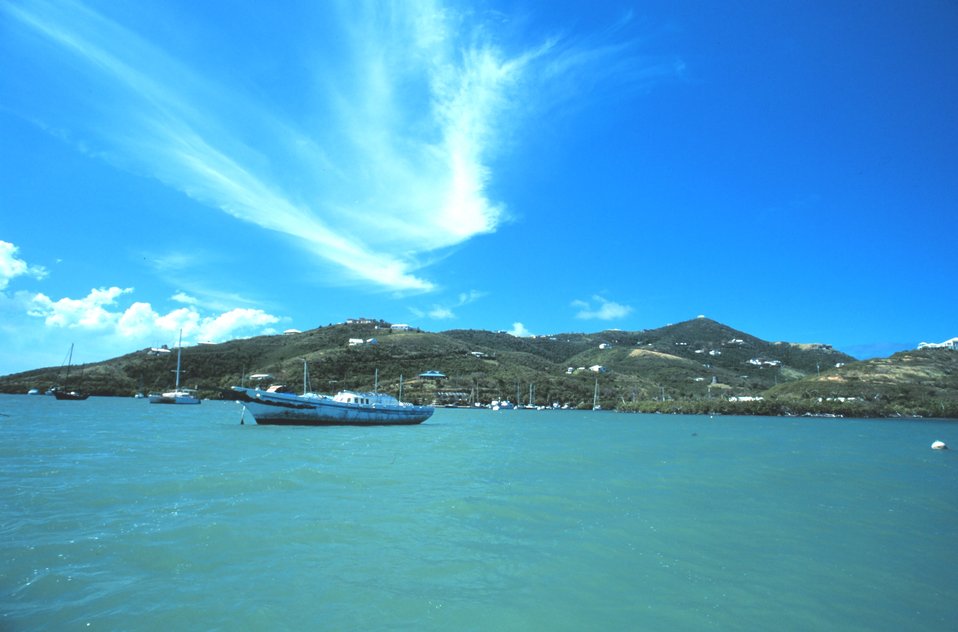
A view of Salt River Bay, where Columbus landed and was attacked by native Americans. This is a National Historical Park and Ecological Preserve.